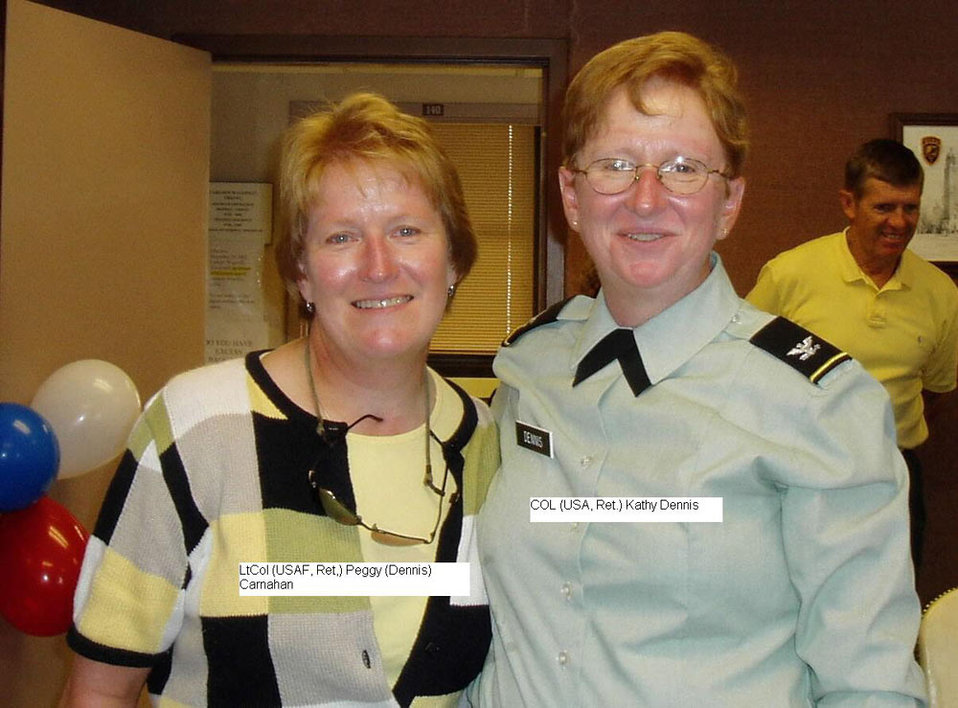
Dennis Sisters-Mountain-Prairie Region

Kathy Dennis works in the Budget and Administration Office.